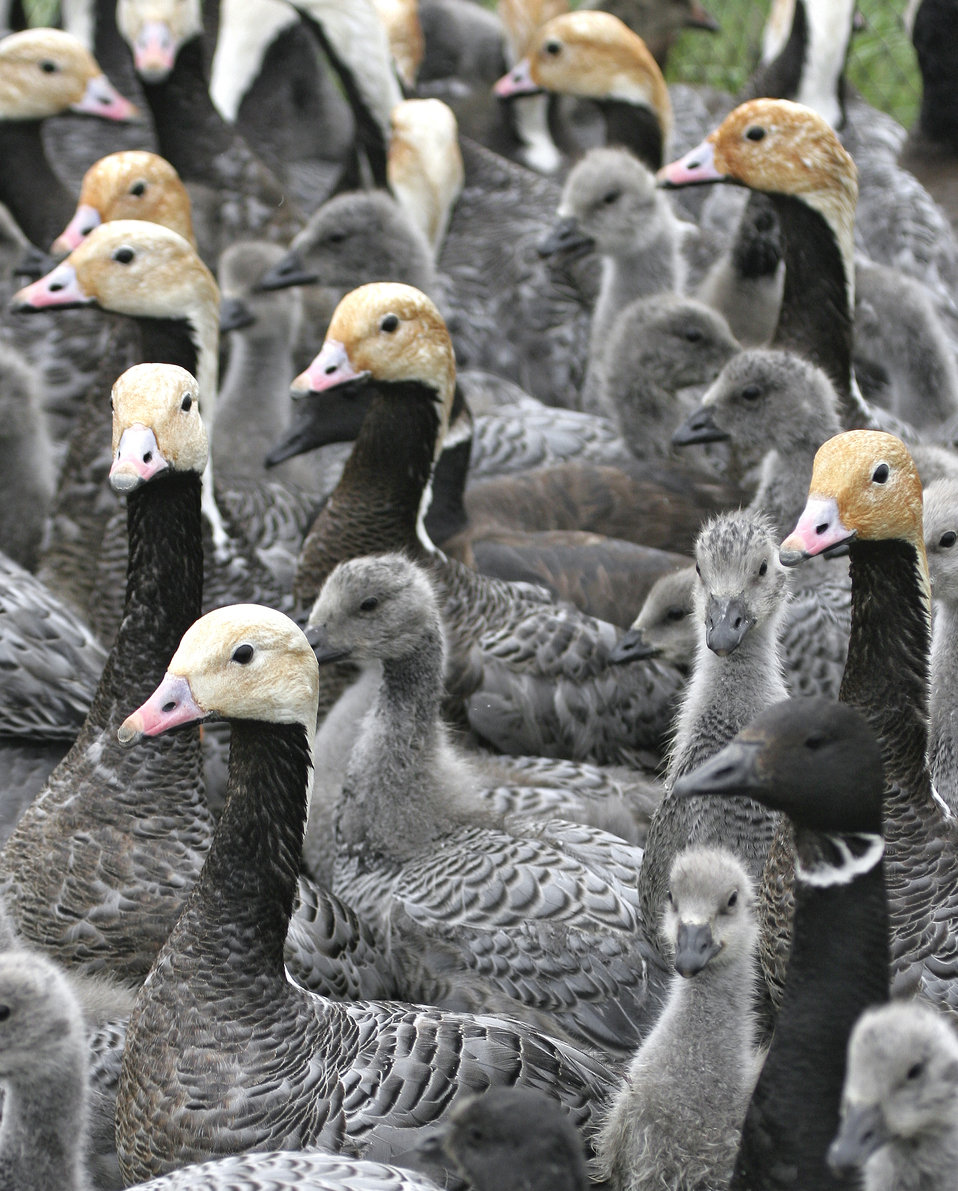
Emperor Goose Round-up

Photo was taken while birds were captured for banding, Yukon Delta NWR.